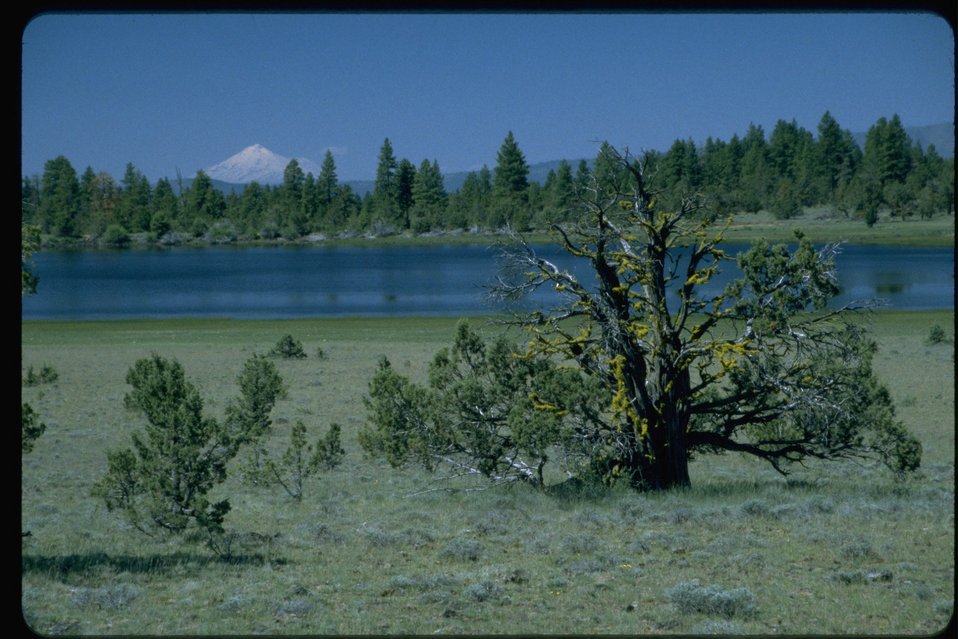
Upper Midway Reservoir with Mt. Shasta in distance.